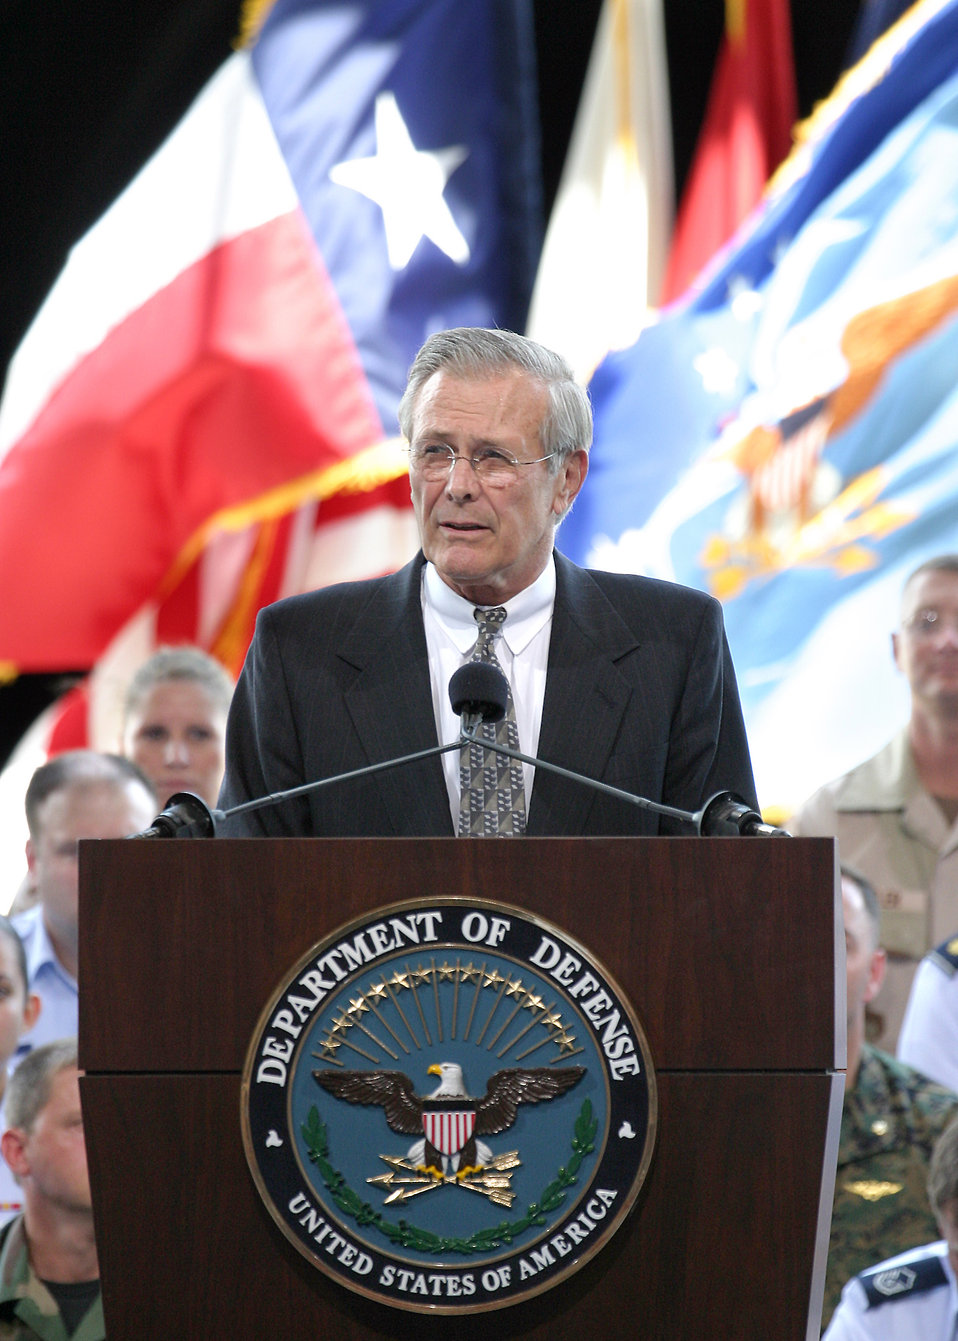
Rumsfeld speech

LACKLAND AIR FORCE BASE, Texas -- Secretary of Defense Donald Rumsfeld addresses the crowd during a town hall meeting here Aug. 25. He spoke to about 3,500 servicemembers from installations in the San Antonio area.